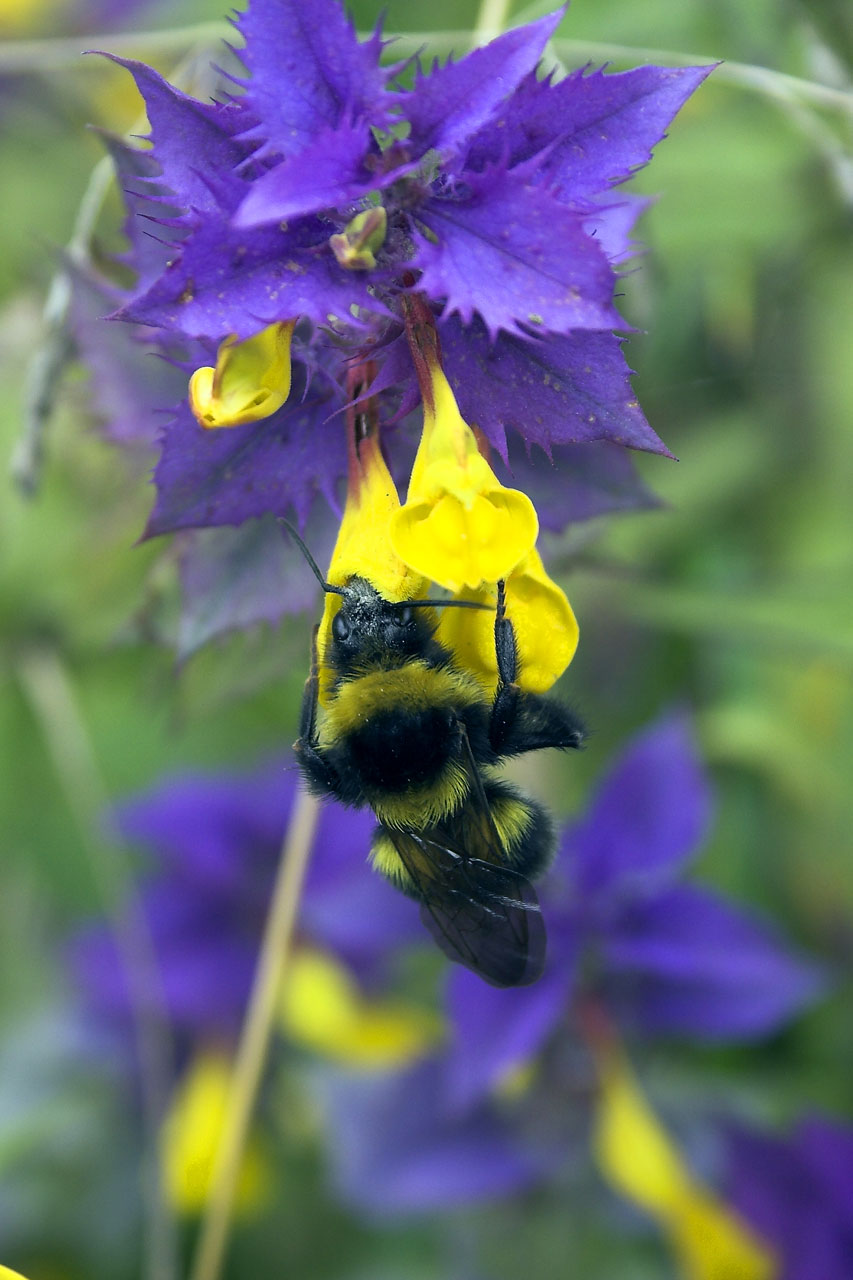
Bumblebee

Huge bumblebee on the flower.